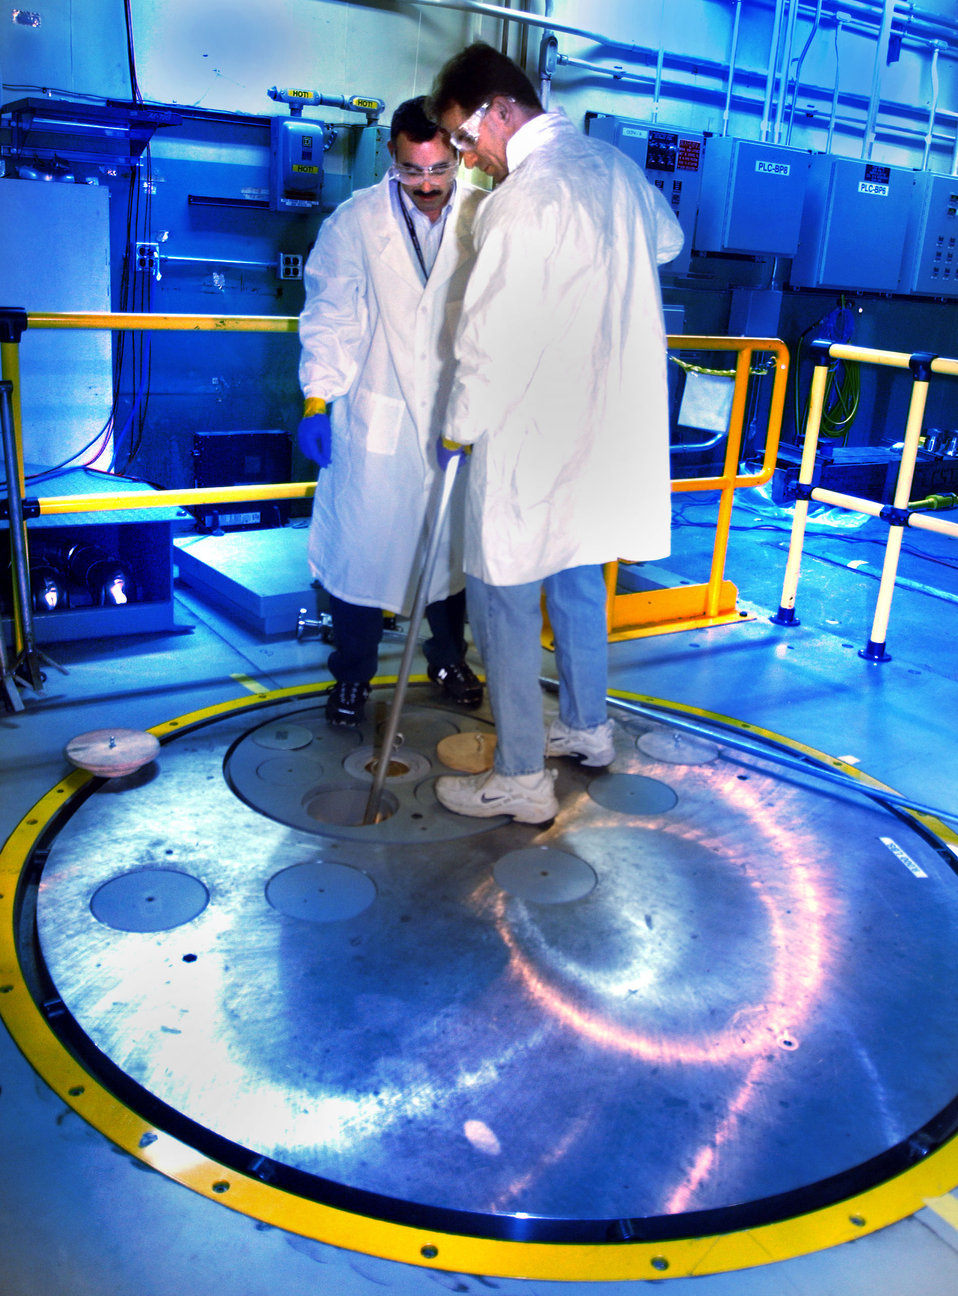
MSRE Molten Salt Reactor Oak Ridge

03-049 DOE photo by Lynn Freeny

MSRE Molten Salt Reactor Oak Ridge National Lab. Oak Ridge Tennessee 2003